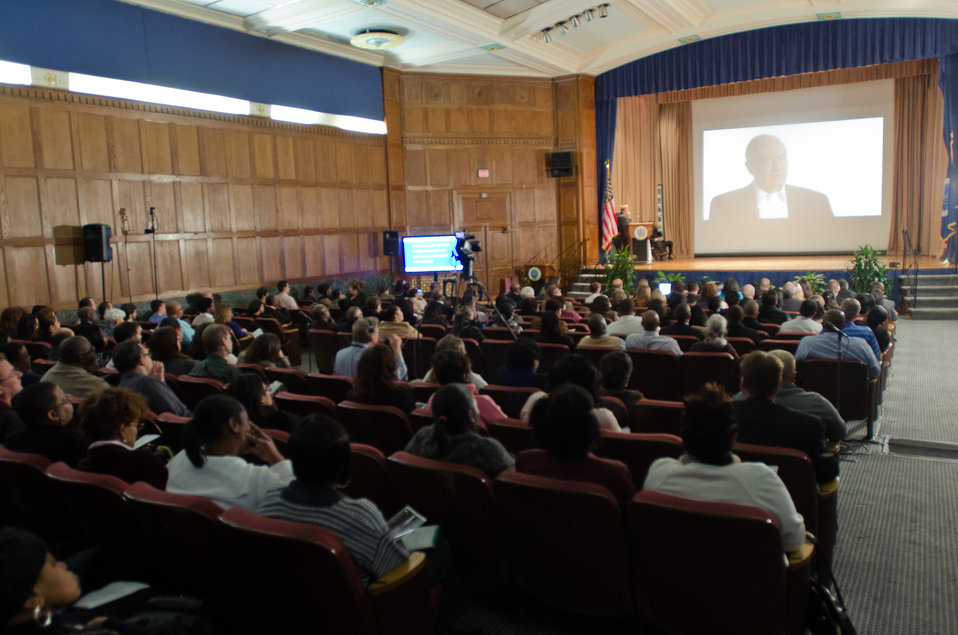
The MLK Jr. Legacy Service Video is shown at the U.S. Department of Agriculture (USDA) Dr. Martin Luther King, Jr. National Service Day presentation of the Drum Major for Service Awards at the USDA Jefferson Auditorium, in Washington,D.C., on Tuesday, Jan. 15, 2013.